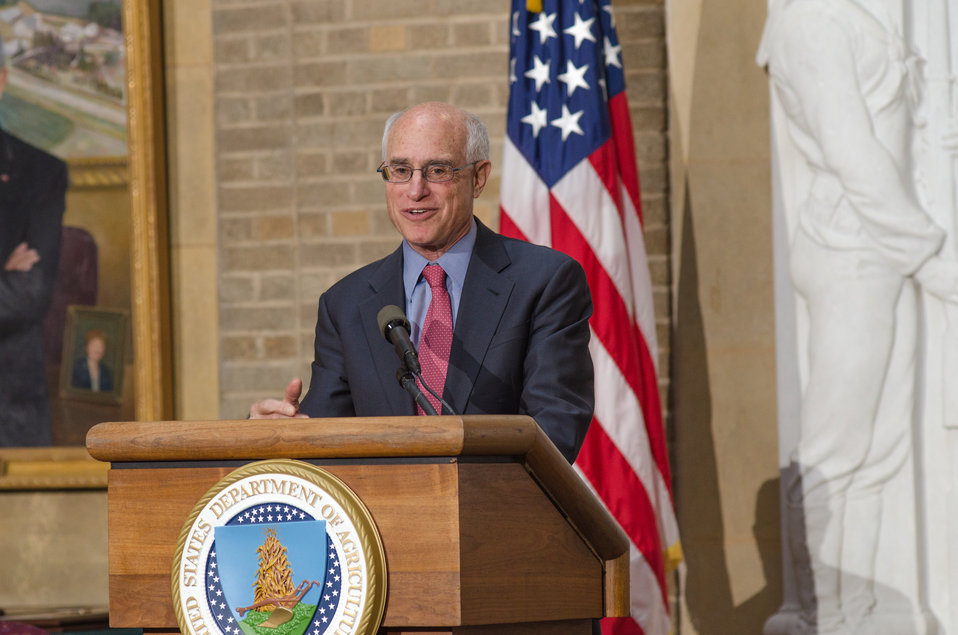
U.S. Department of Agriculture (USDA) Natural Resources and Environment Under Secretary Harris Sherman acknowledges all those who donated and volunteer coordinators, during the 2012 Combined Federal Campaign Awards Ceremony, Thursday, Mar. 21, 2013, at the USDA Whitten Building Patio, in Washington D.C.